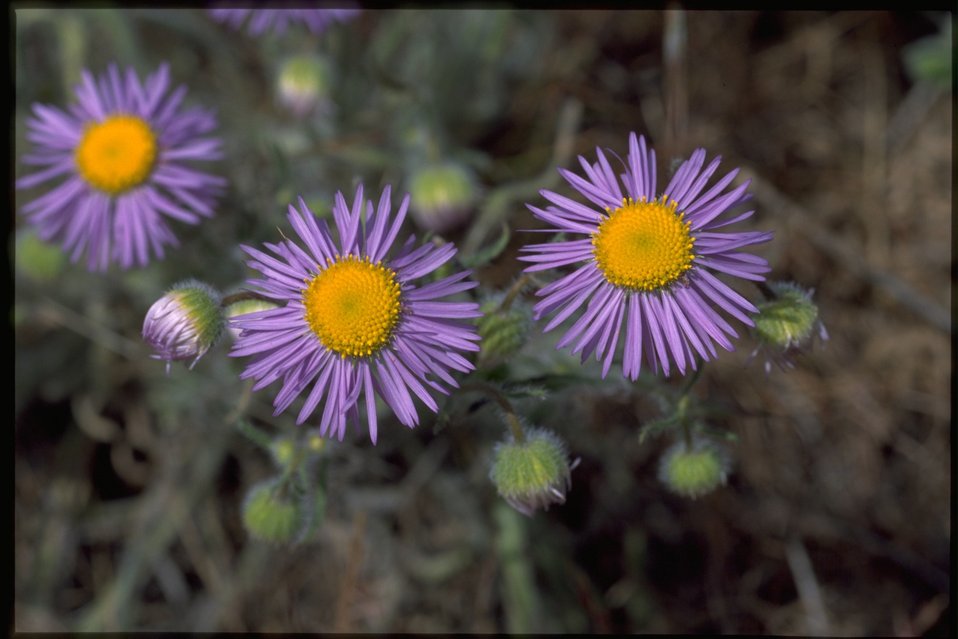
Closeup shot of Asteraceae.